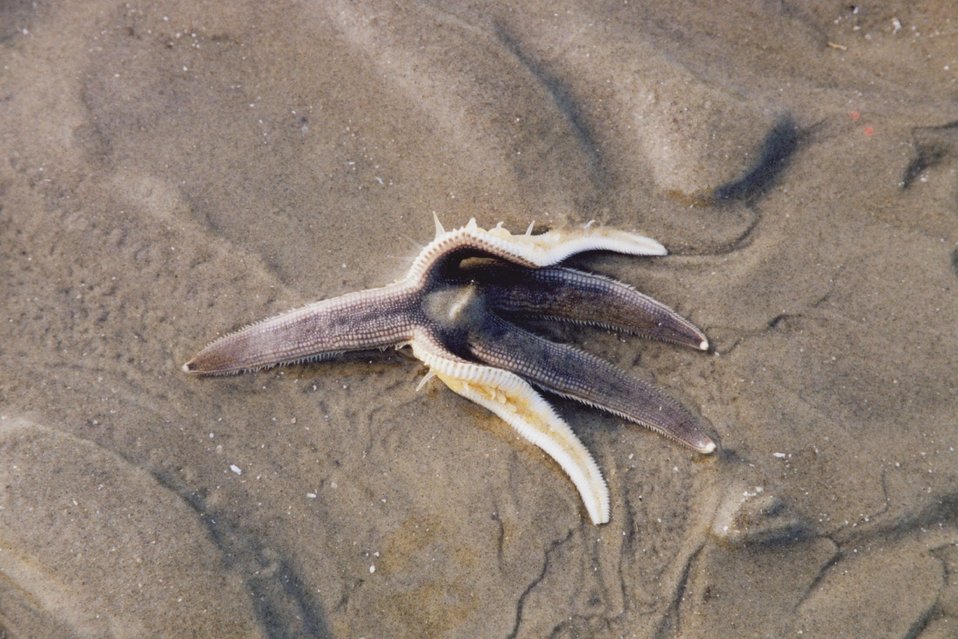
A sea star left on the beach after the tide receded.